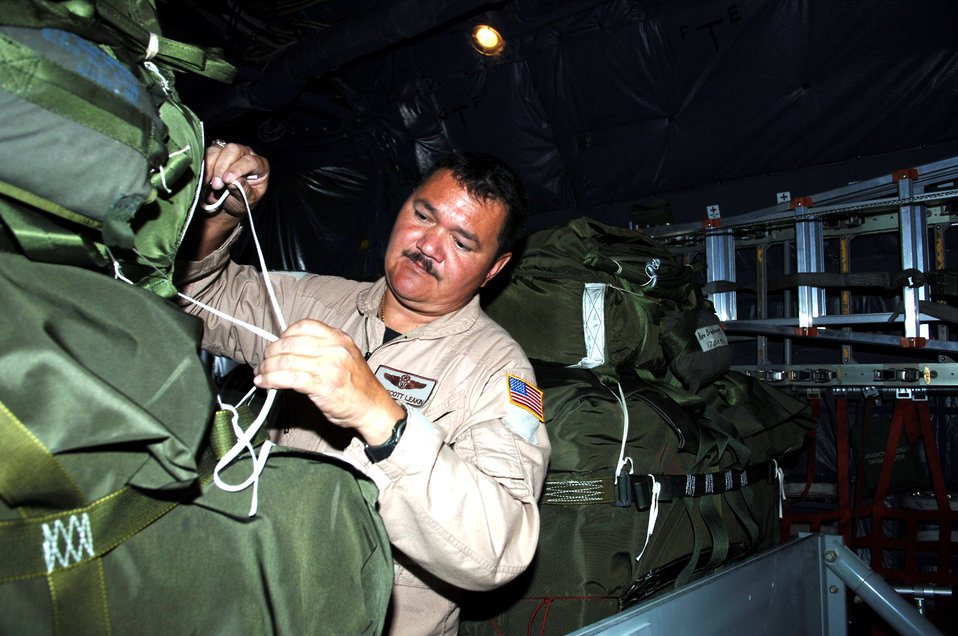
Pakistan Earthquake Relief

BAGRAM AIR BASE, Afghanistan -- Master Sgt. Scott L. Leakin attaches a parachute to relief supplies destined for Pakistan. A loadmaster with the 517th Airlift Squadron, his C-130 air dropped 14 pallets of supplies into the country, devastated by an Oct. 8 by a magnitude 7.6 earthquake. It was the Air Force's first such airdrop. Soldiers and Airmen here assemble approximately 20,000 pounds of food, blankets, and supplies for the drop. To date, more than 180,000 pounds of food, water, cots and medical supplies have been flown out of Bagram headed for Pakistan. Master Sgt. Leakin is deployed here from Elmendorf Air Force Base, Alaska.